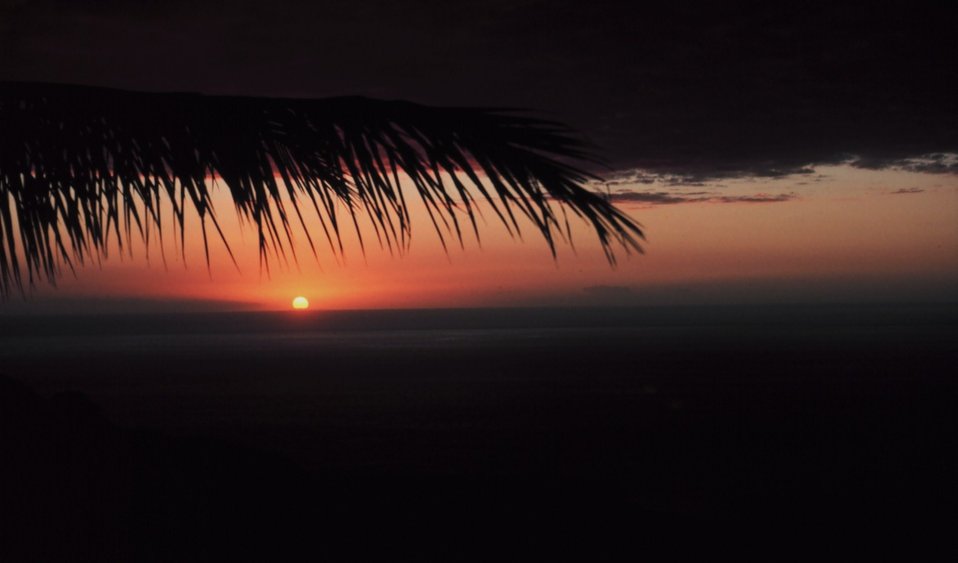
Hawaiian sunset